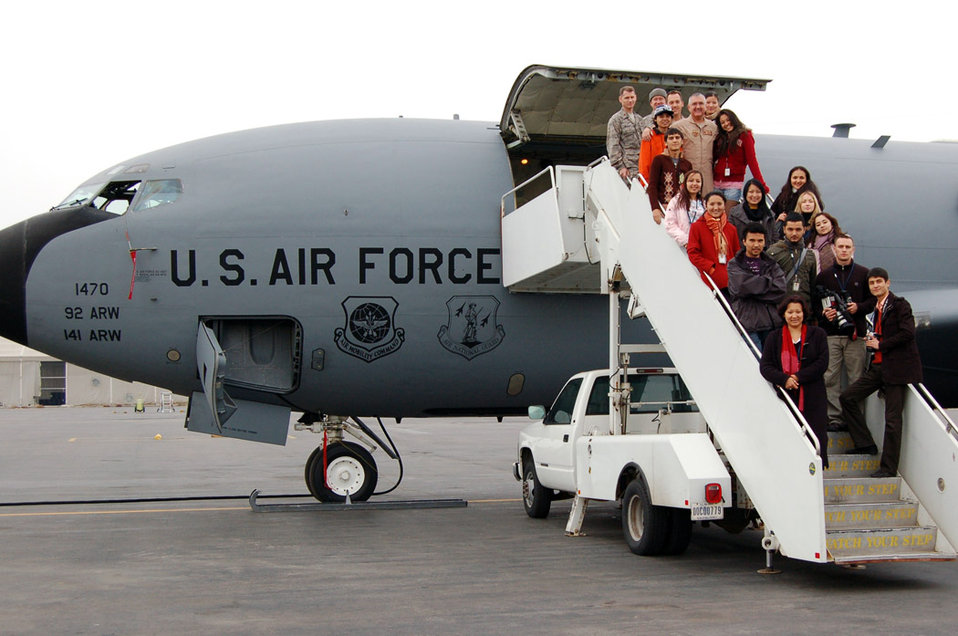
Manas Airmen open base to Kyrgyz college students

Students from the American University of Central Asia tour a KC-135 Stratotanker during a Nov. 5 visit to Manas Air Base, Kyrgyzstan. Students learned about the mission and the Airmen who serve at the base.